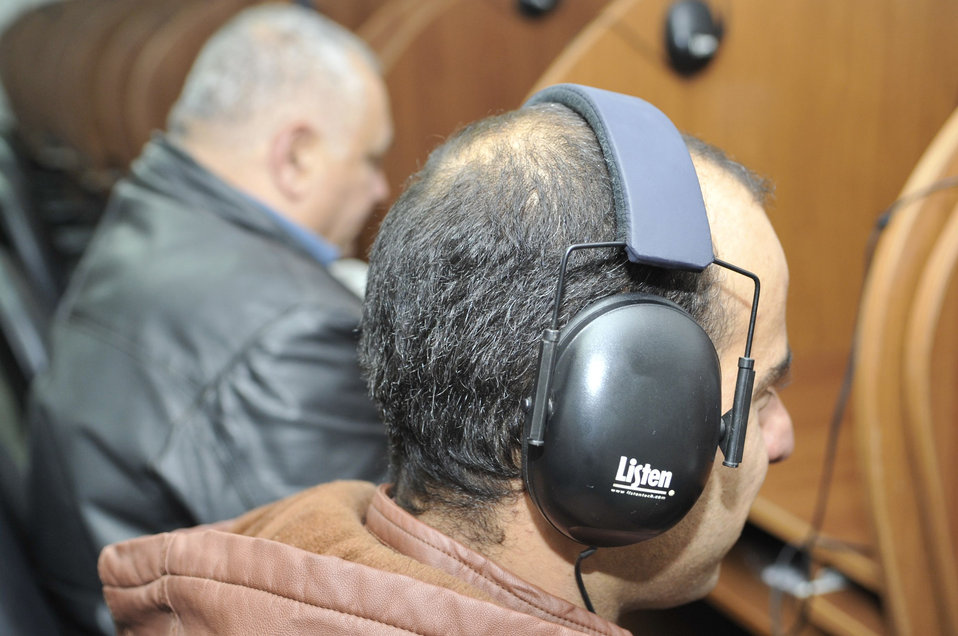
Airman provides gateway for Iraqis to American training

Two Iraqi air force officers take the American Language Course Placement Test Feb. 6, 2011, at Forward Operating Base Union III, Iraq.